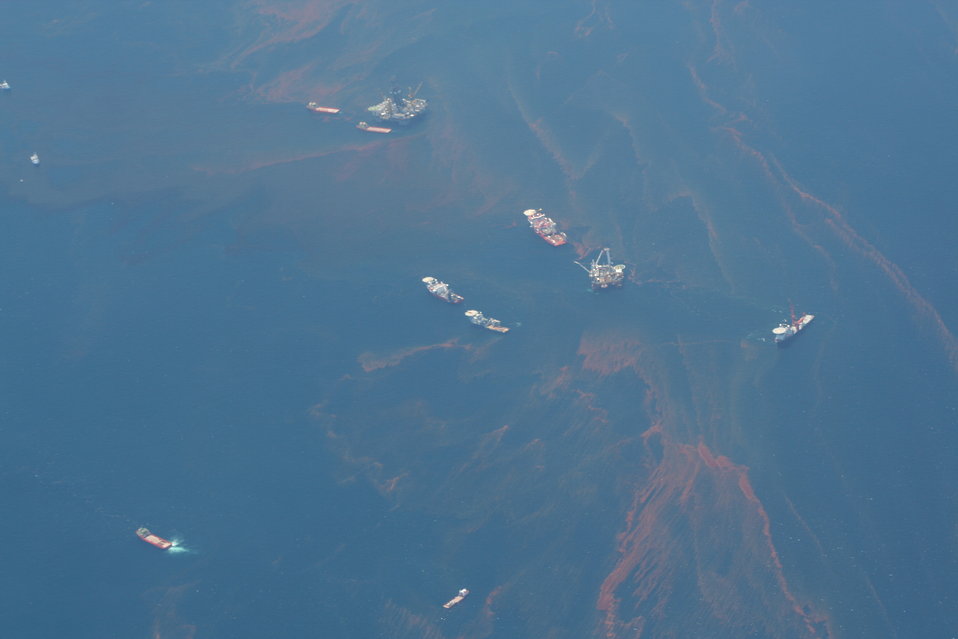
Flight 11 071